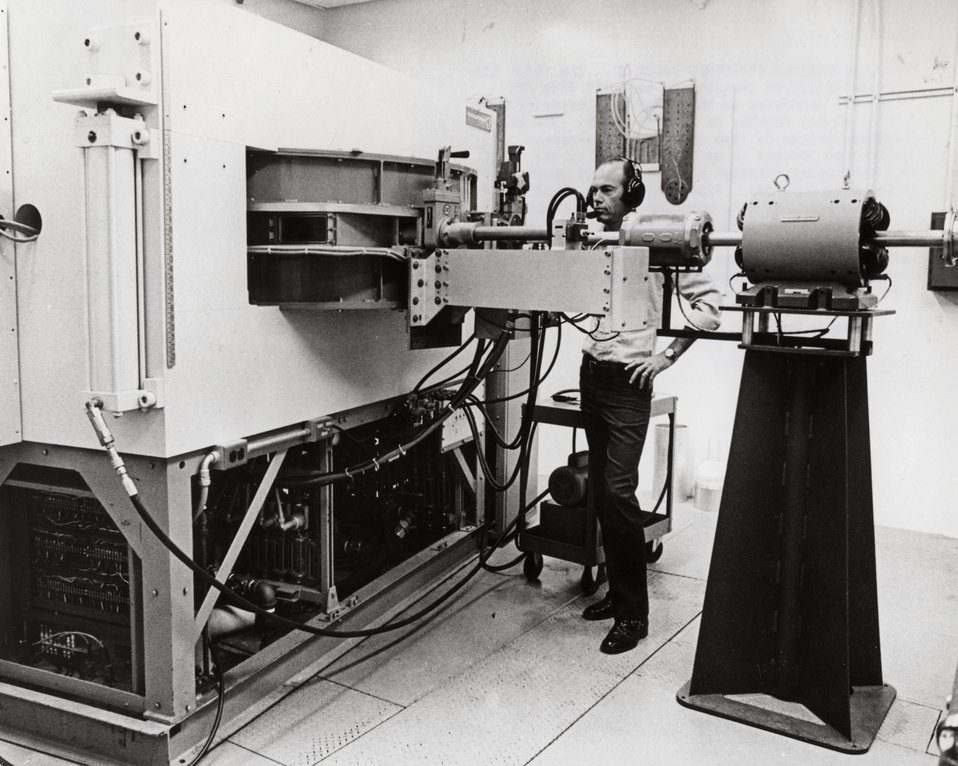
The third biomedical cyclotron facility to be built with AEC funds was dedicated at the University of California (UCLA) at Los Angeles on June 30, 1971. Circa 1972.